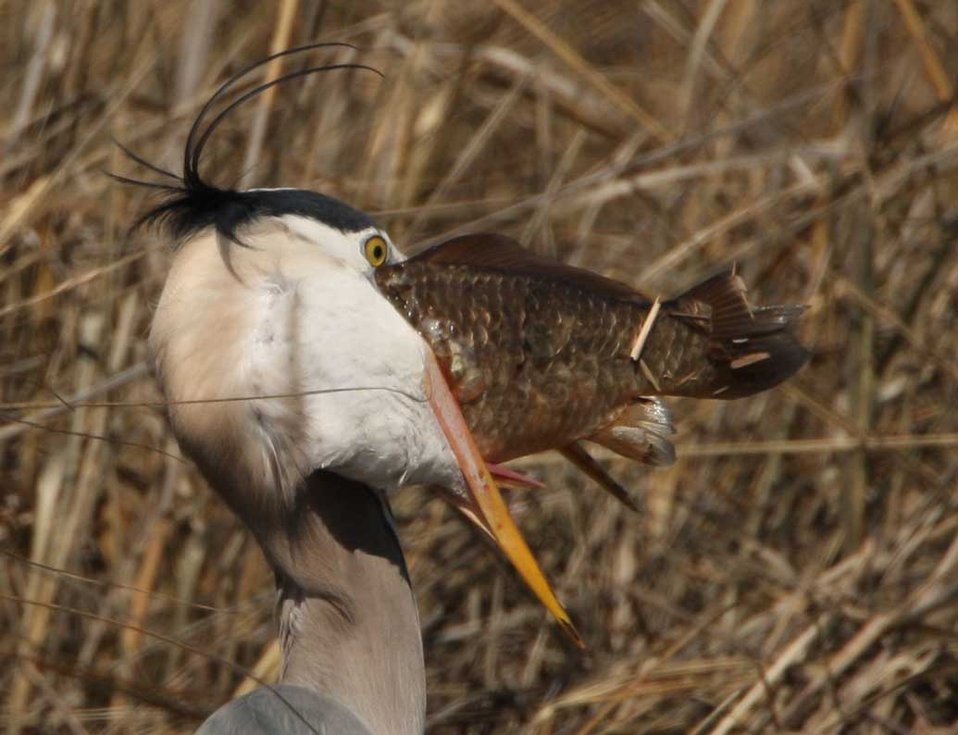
Great Blue Heron with big fish

Great blue heron holding a large fish in its mouth at John Heinz National Wildlife Refuge in Philadelphia, Pennsylvania.